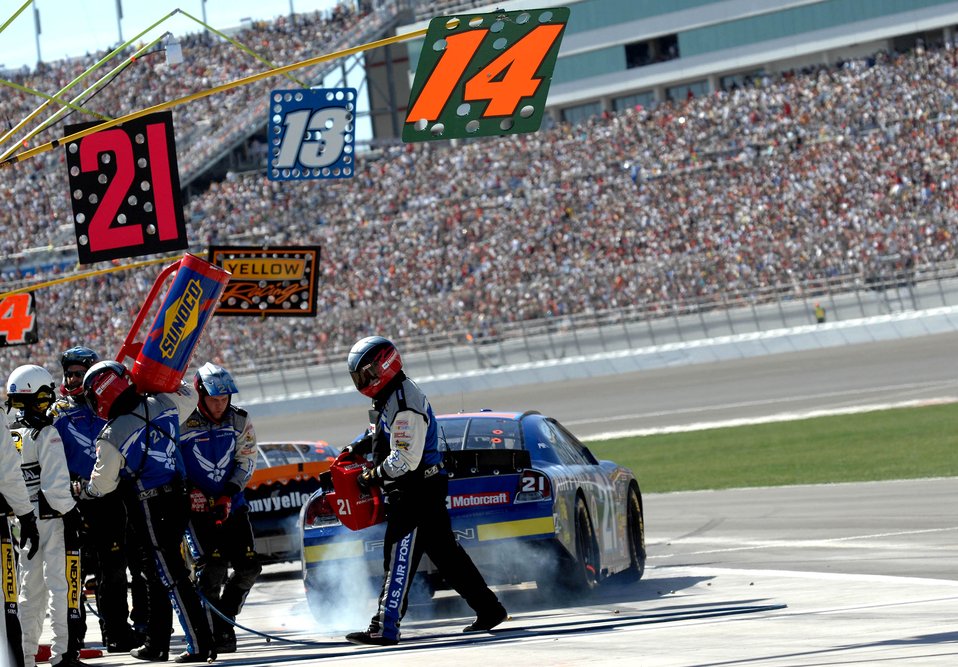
NASCAR Nextel Cup UAW Daimler-Chrysler

Crew members from the Air Force #21 car, driven by Jon Wood, complete a successful pit stop March 11 at Las Vegas Motor Speedway during the NASCAR Nextel Cup UAW Daimler-Chrysler 400.